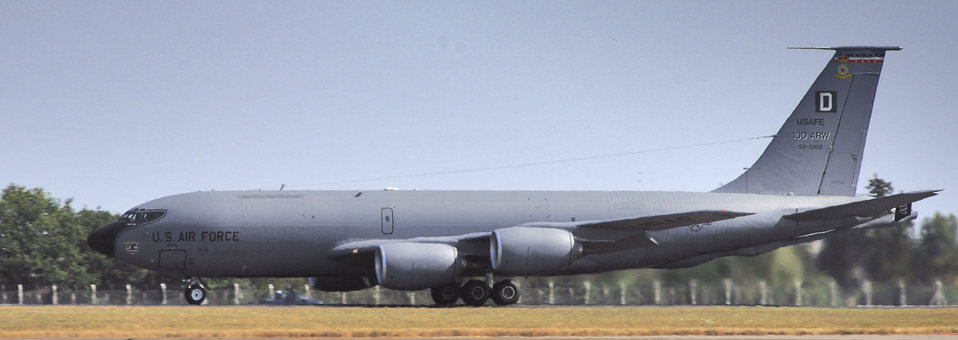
Mildenhall's tanker services in high demand

A KC-135 Stratotanker takes off for a mission from Royal Air Force Mildenhall, England, on July 24. Unusually hot weather for this part of England caused a heat wave to distort the lower image of the nearly 50-year-old tanker, just as the heat from the turbofan engines distorts the view of trees behind it.